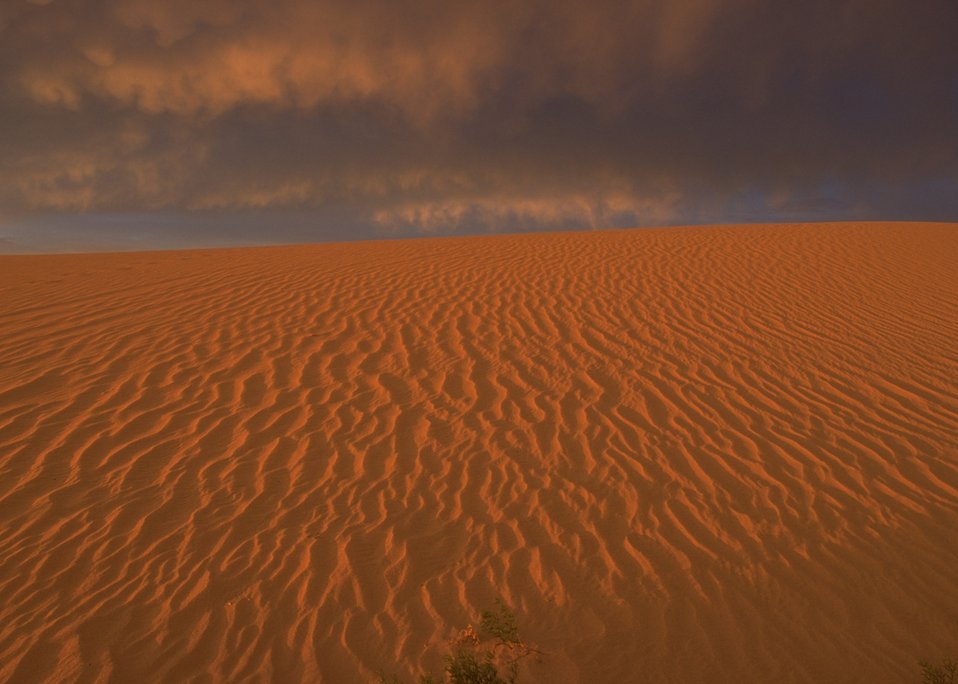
Passing storm at sunset over OHV Sand Dunes Area, Rock Springs Field Office.